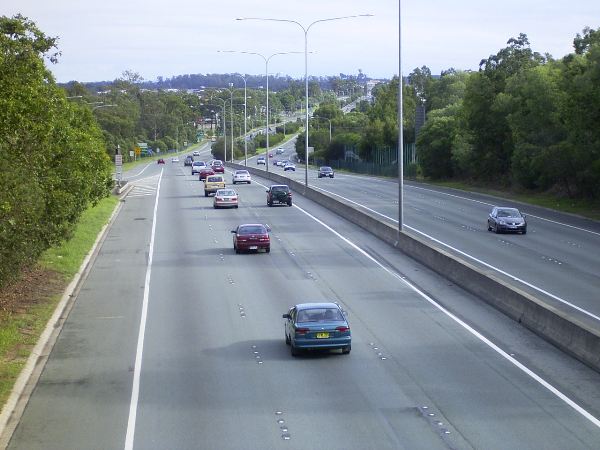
no original description